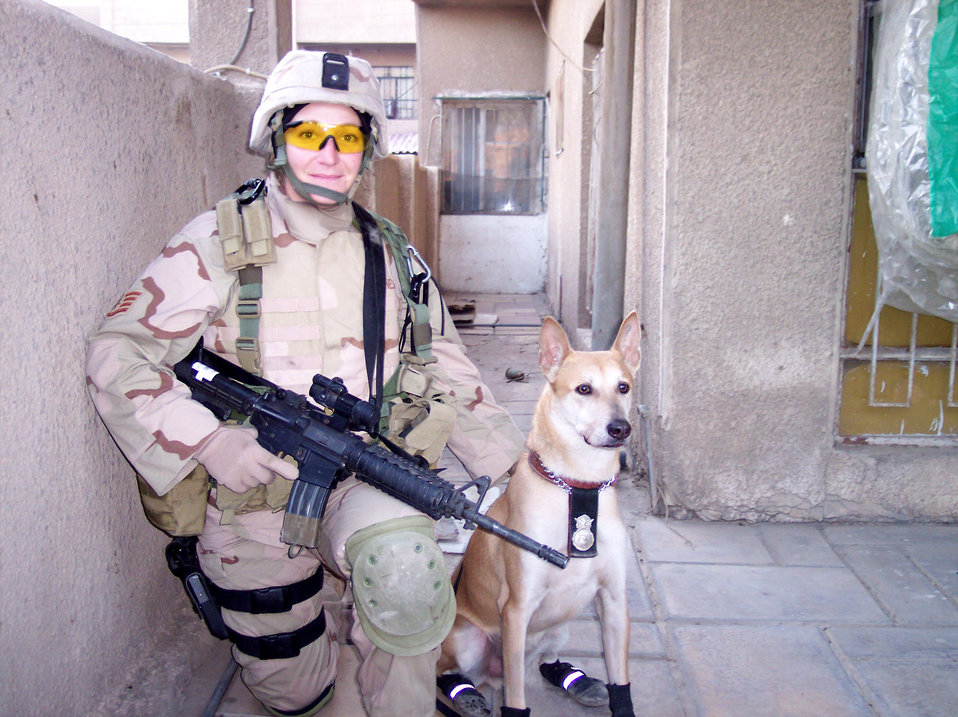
Tinker canine dies while on patrol in Iraq

Staff Sgt. Alissa Jones and her military working dog, Marco, pause while deployed to Iraq. Marco was killed while on patrol Jan. 19 in Baghdad when he was electrocuted after coming in contact with a metal object. Sergeant Jones was not injured. Sergeant Jones is assigned to the 72nd Security Forces Squadron at Tinker Air Force Base, Okla.